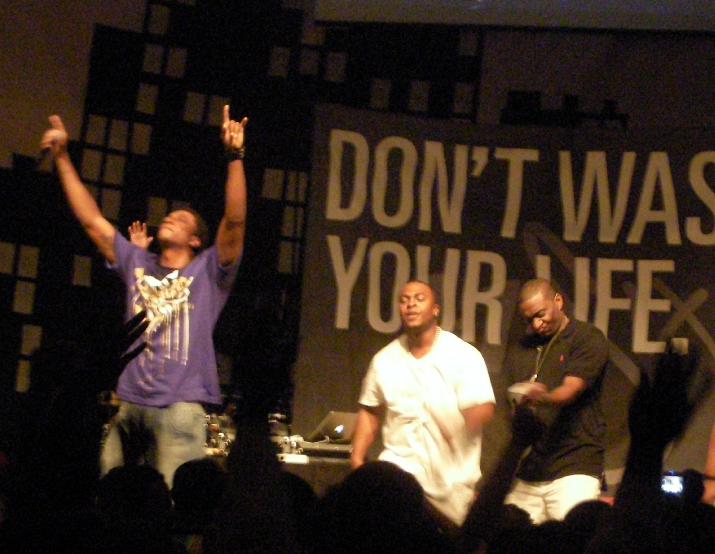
116 Clique on DWYL Tour 2009